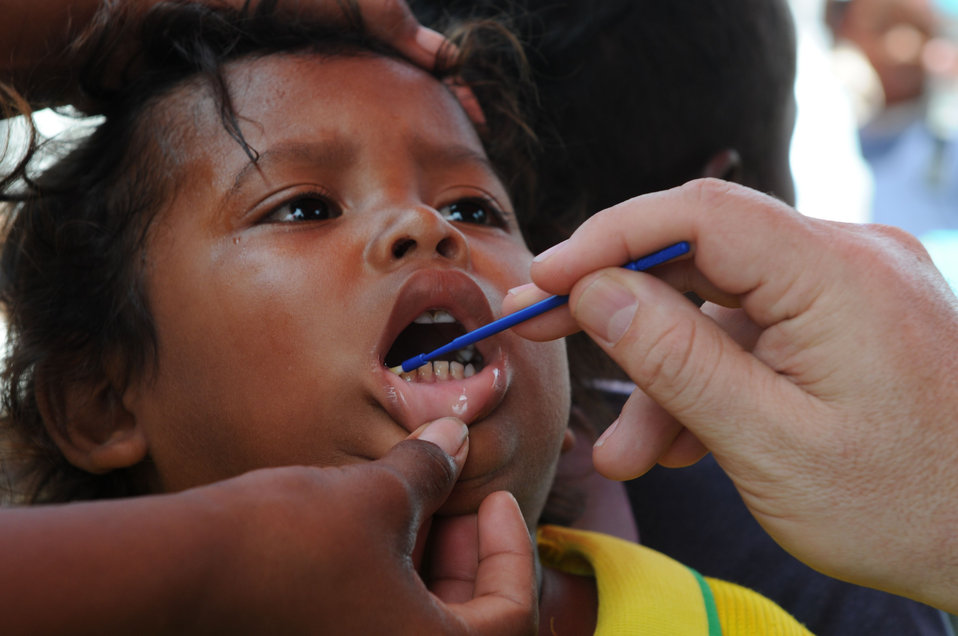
Photographed by a U.S. Navy photographer in Betania, Nicaragua this 2008 image depicts U.S. Public Health Service (USPHS) Lt. Cmdr. Gary Brunette in the process of cleaning and applying fluoride to the teeth of a young Nicaraguan child so that over time, the enamel of his teeth would be strengthened.